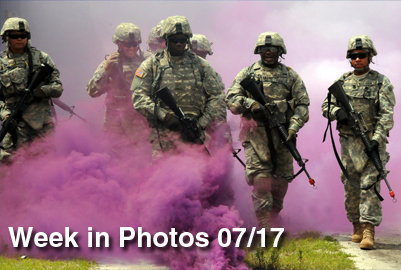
Purple rain

Airmen and Sailors undergoing individual augmentee training walk through a cloud of smoke during an exercise on the training range at Fort Dix, N.J. The servicemembers are undergoing training before deploying to support operations Enduring Freedom and Iraqi Freedom.